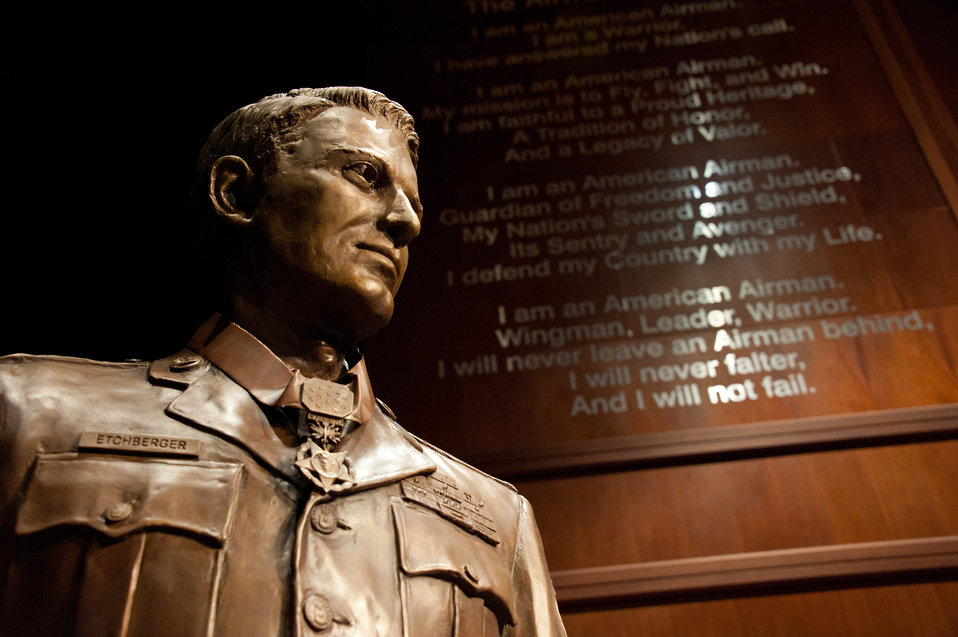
Etchberger legacy lives on

The bust of Medal of Honor recipient Chief Master Sgt. Richard L. Etchberger shines onstage at the Air Force Senior NCO Academy at Gunter Annex, Ala., March 26, 2012. The bust, sculpted by John Lajba, will be a part of the permanent exhibit at the academy.